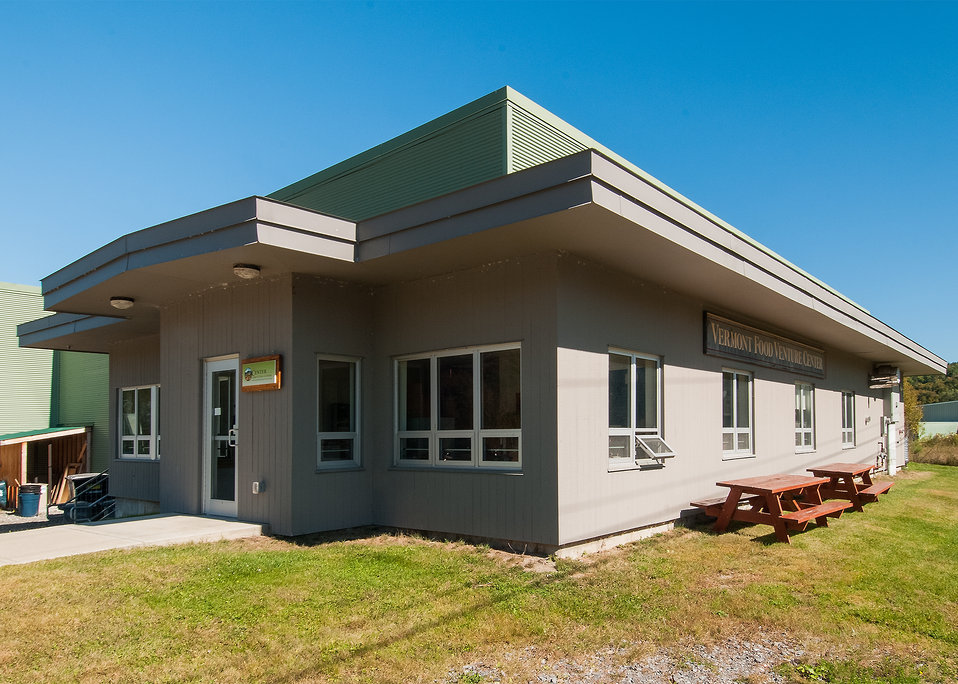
The Vermont Food Venture Center, a non-profit multi-purpose incubator kitchen and food processing facility operated by the Center for an Agricultural Economy in Hardwick, VT received assistance through a U.S. Department of Agriculture (USDA) Rural Development (RD) Rural Business Enterprise Grant (RBEG). The grant offers farmers in a region of rural America that celebrates food, farm and local economy the tools necessary to convert crops to value added business to start or expand their food-based business with the potential to create jobs and increase economic opportunity on Sep. 19, 2013.